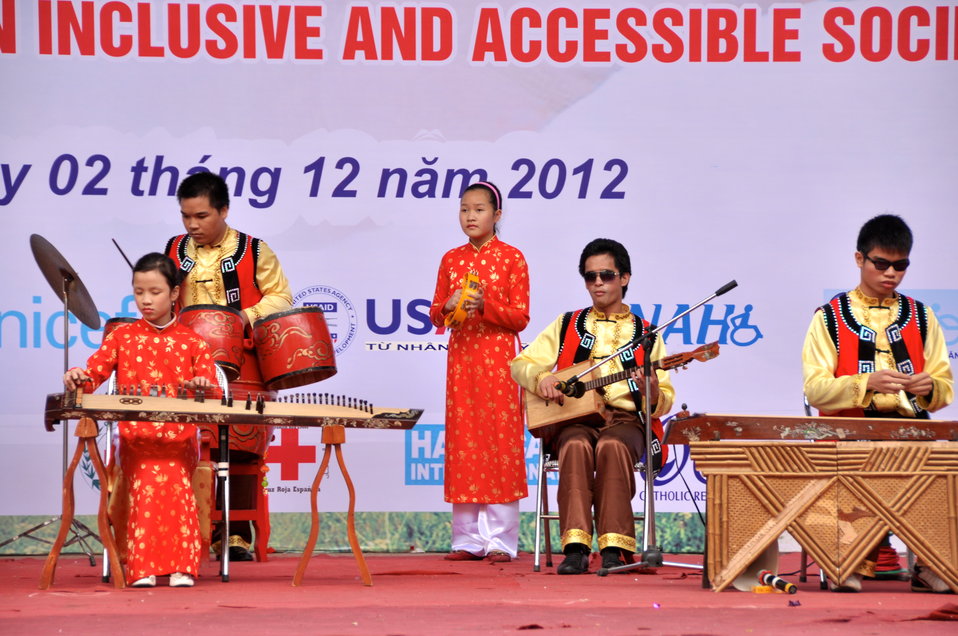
USAID joins celebration of International Day of Persons with Disabilities in Hanoi, Vietnam

December 2, 2012